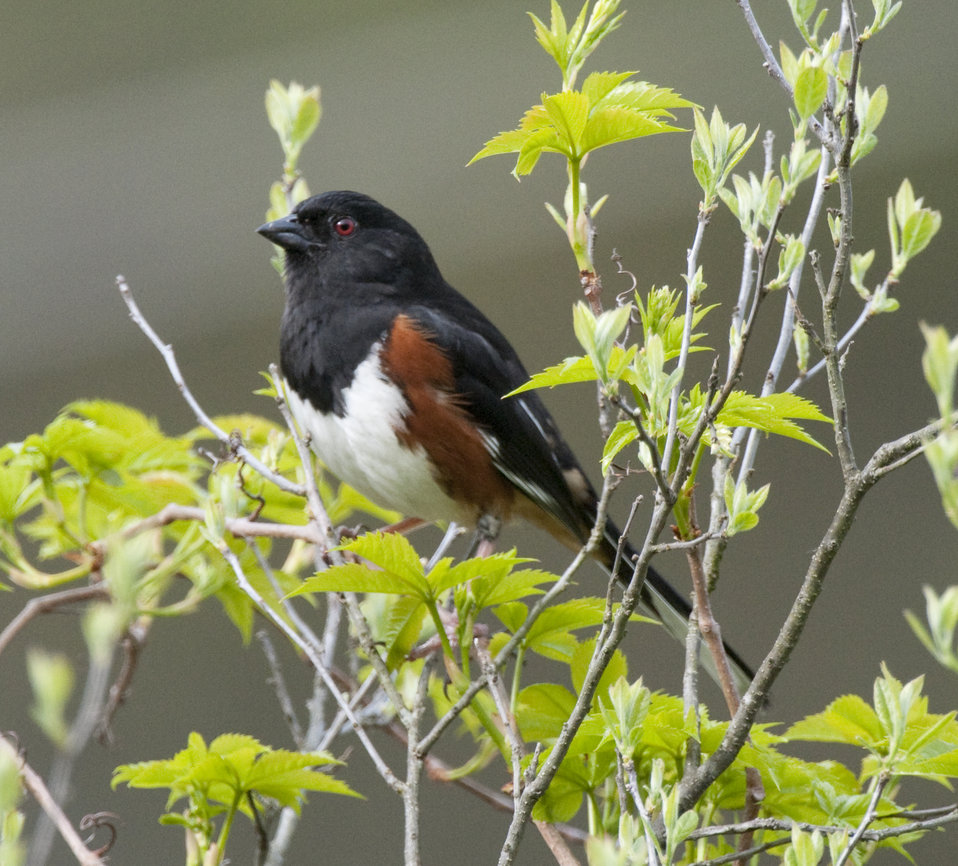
Photo of the Week - Male eastern towhee at the Quabbin Reservoir (MA)

Photo of the Week - 05/24/11

Male eastern towhee photographed at the Quabbin Reservoir, near South Athol, Massachusetts.